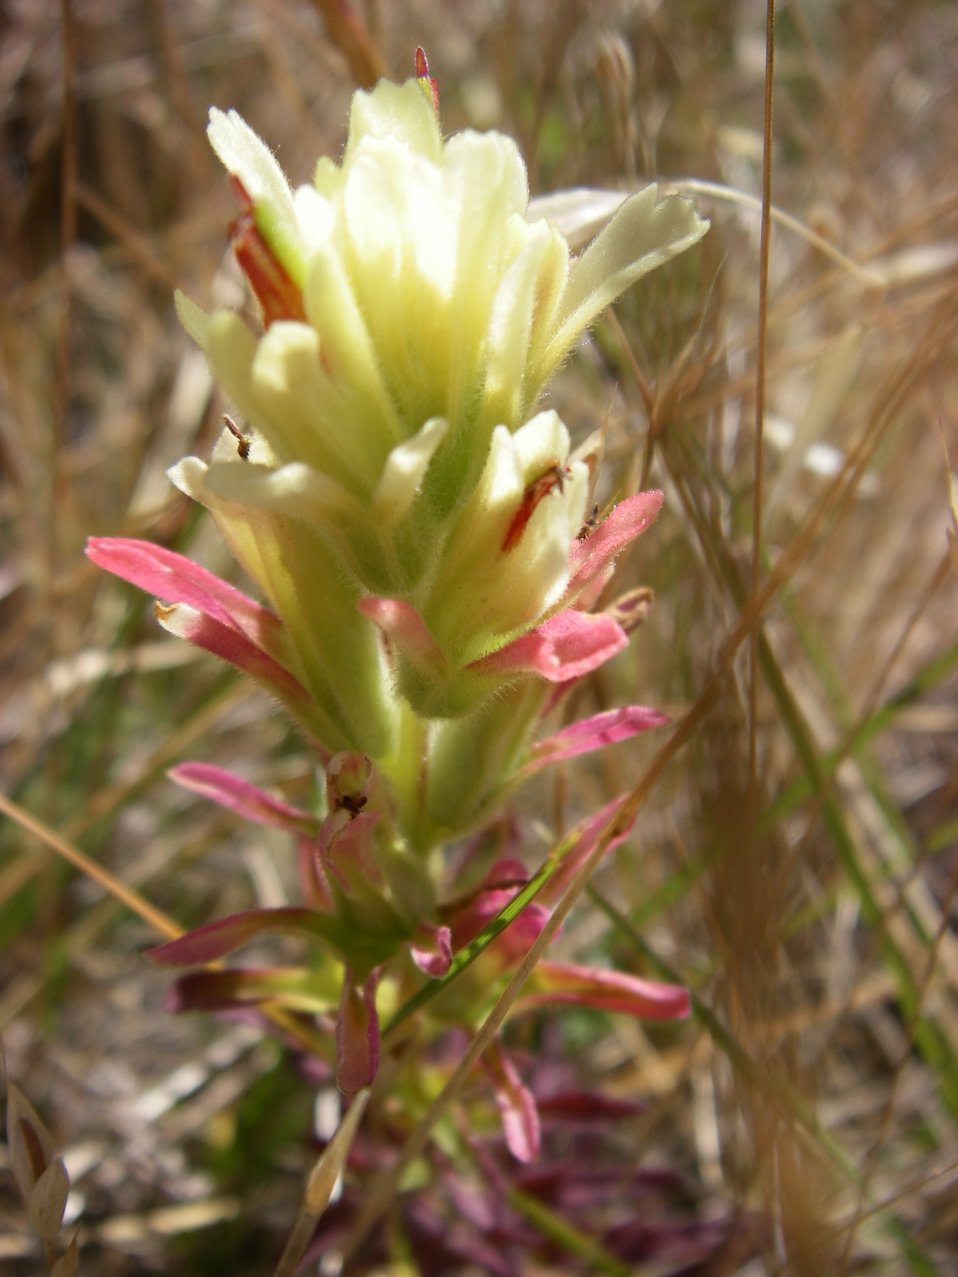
Tiburon Indian Paintbrush

Photo Credit: Ben Solvesky/USFWS

Species protected by the Santa Clara Valley Habitat Conservation Plan